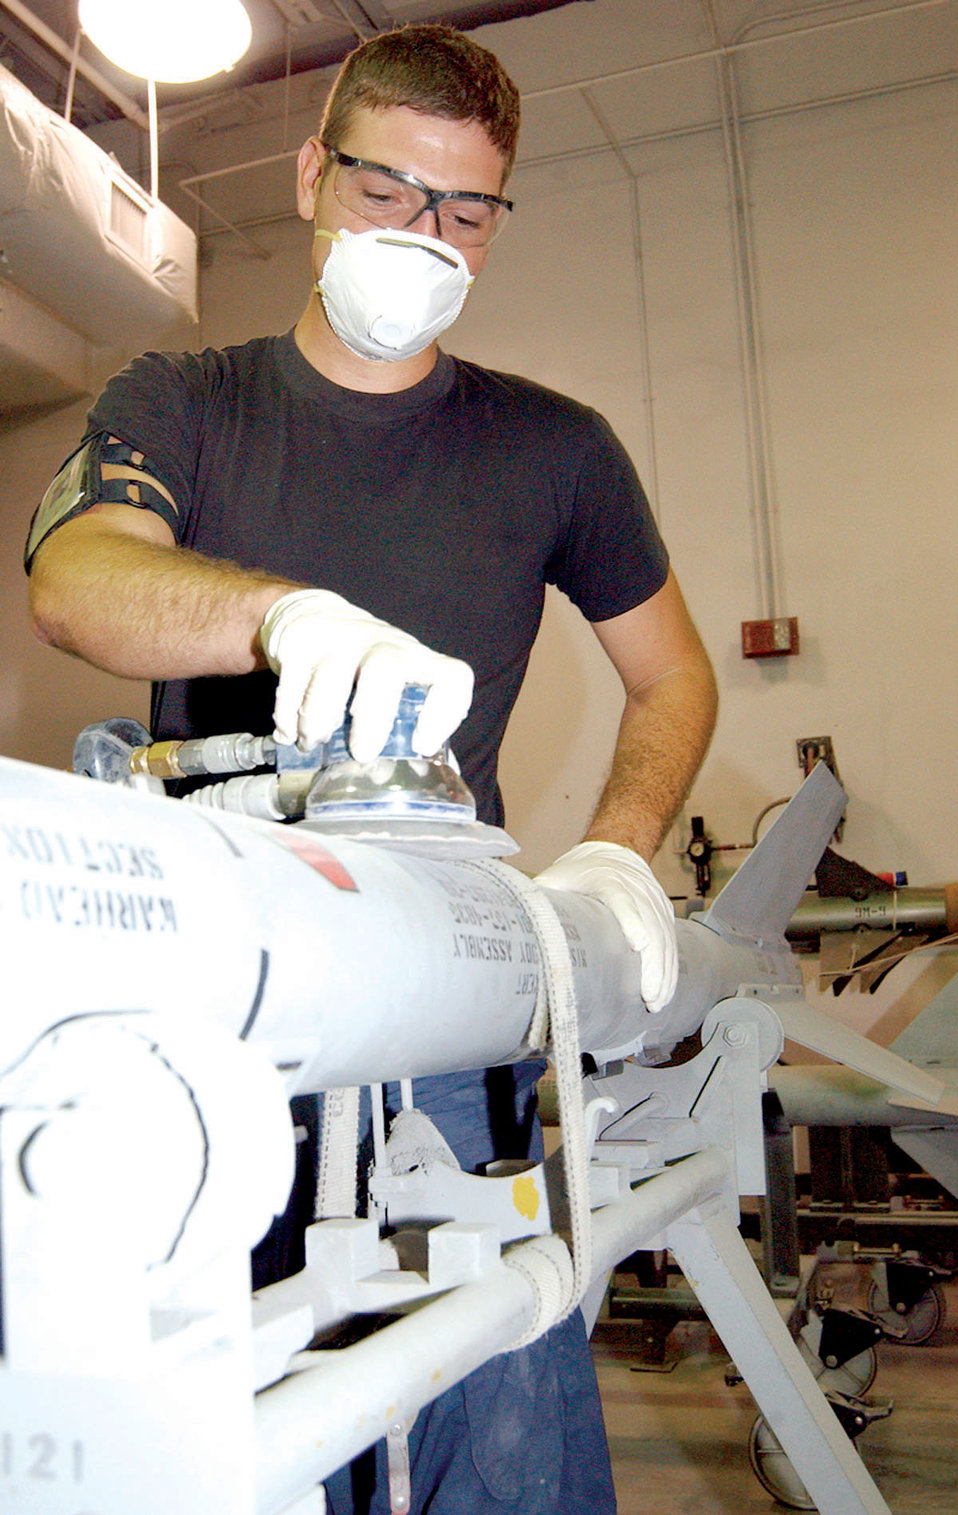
Ensuring Eagles fly

SEYMOUR JOHNSON AIR FORCE BASE, N.C. -- Senior Airman Michael Griffin sands an old coat of paint off of an AIM-9 Sidewinder training missile. The AIM-9 is just one of many weapons serviced by the 4th Equipment Maintenance Squadron munitions flight. The missile can be used on an F-15E Strike Eagle.